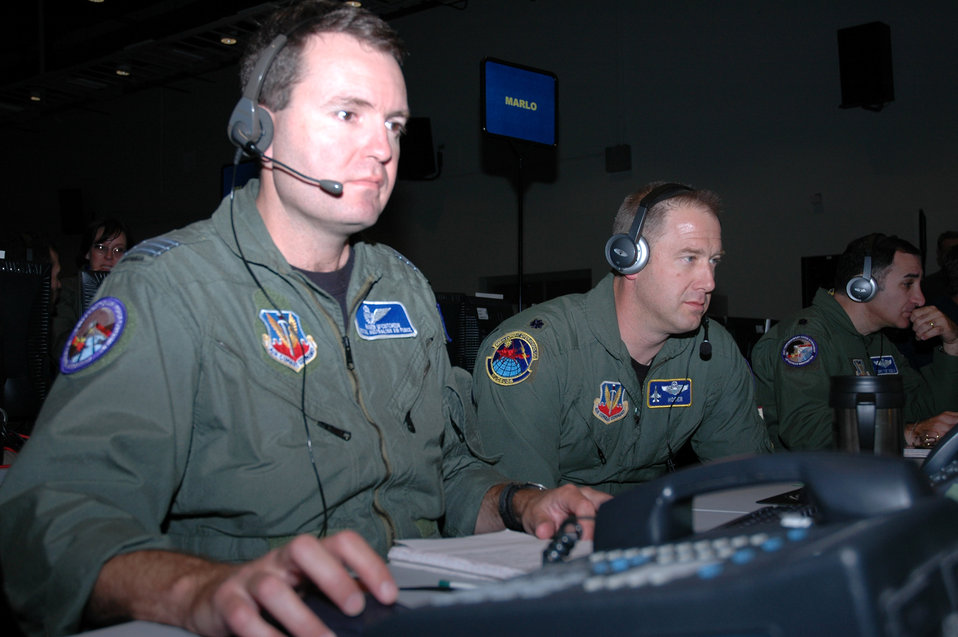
Coalition forces integral part of JEFX 2006

Royal Australian Air Force Wing Commander Roger McCutcheon (left) works with Lt. Col. Mike Heyser in the combined air and space operations center at Joint Expeditionary Force Experiment 2006 at Nellis Air Force Base, Nev.